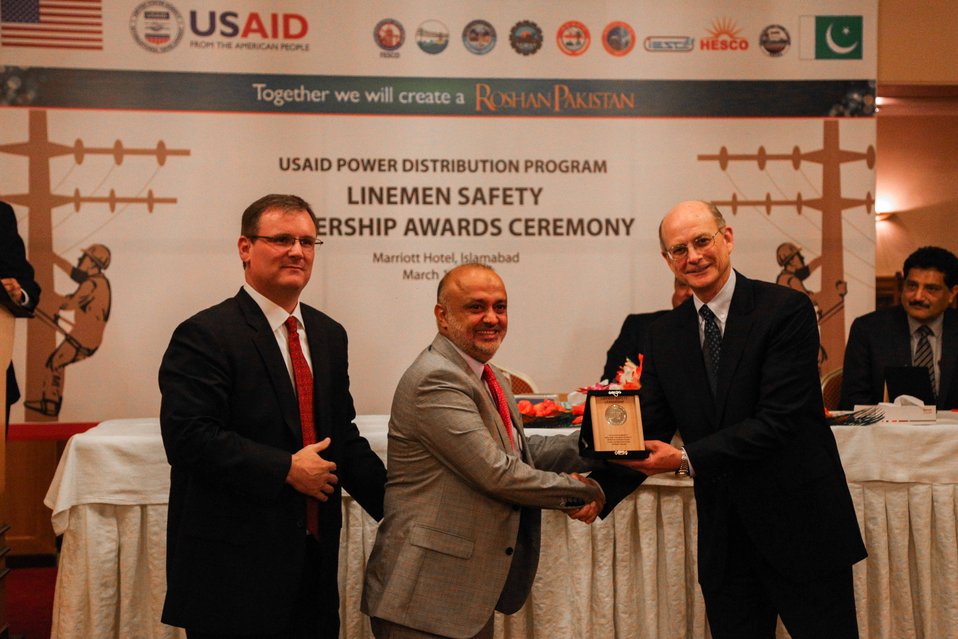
Saghir Ahmed receives an award from Michael Curtis